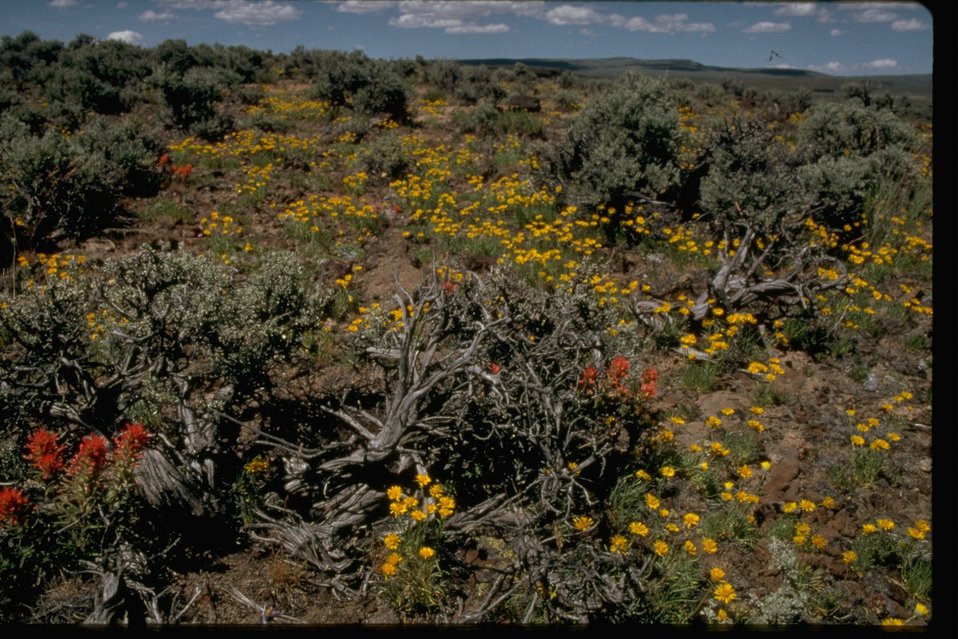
Wildflowers near Stallion WH in the Hawk Mountain Wilderness Study Area. OR 1-146A.